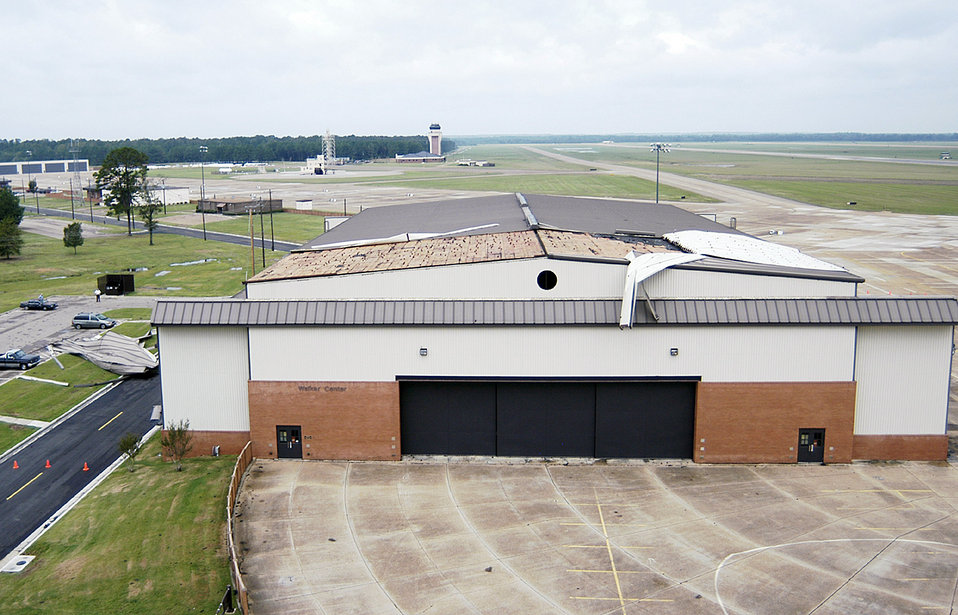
Columbus cleanup underway

COLUMBUS AIR FORCE BASE, Miss. - The 14th Logistics Readiness Division mobility processing hangar was the only building to receive moderate roof damage from Hurricane Katrina. Although the hurricane did not pass directly over the base, the base sustained more than $765,000 in damage. Maximum winds reached 50 knots.